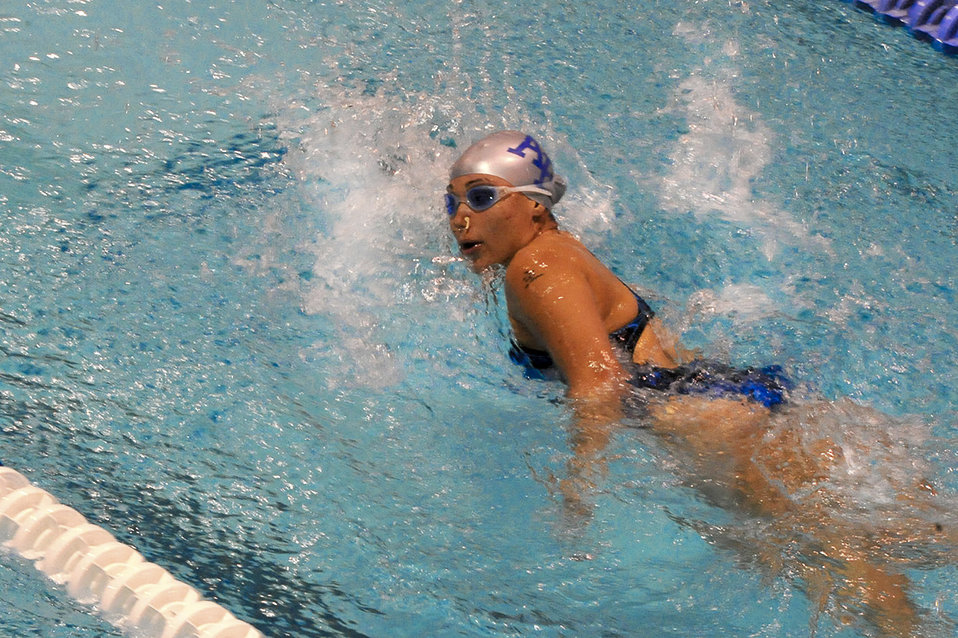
Air Force makes splash

Jennifer Stone competes in a swimming competition May 18, 2011, during the 2011 Warrior Games at the U.S. Olympic Training Center in Colorado Springs, Colo. More than 200 wounded warriors from all the military services are competing in paralympic-style athletic events May 16 through 21.